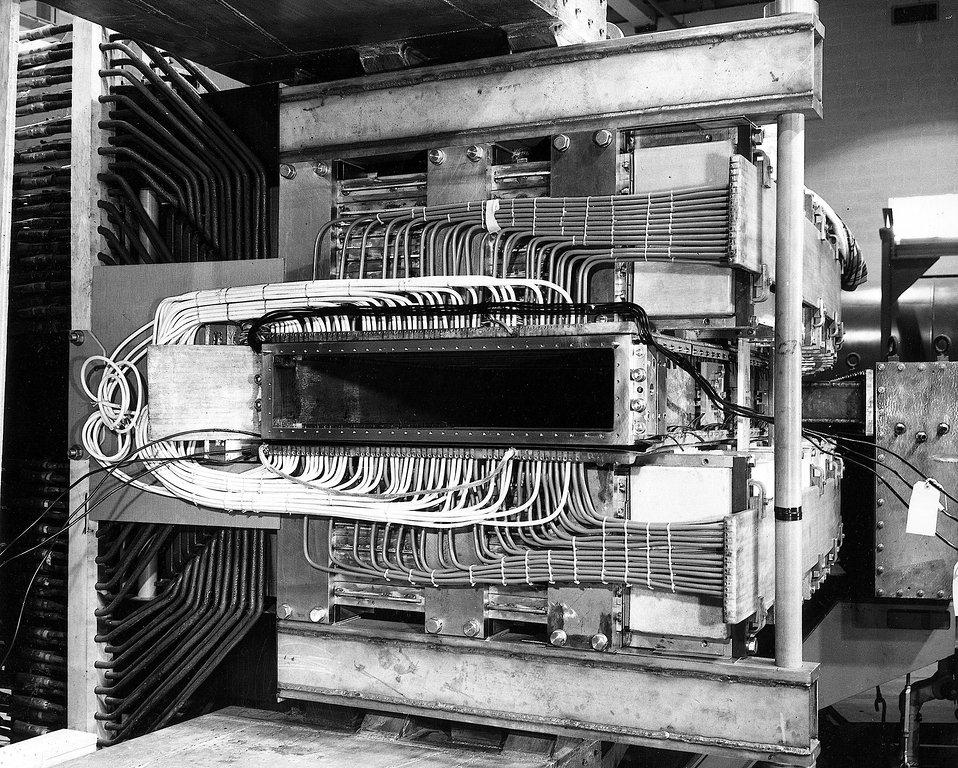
A view of the end of quadrant IV from the north straight section showing pole face winding connections. c. 1951